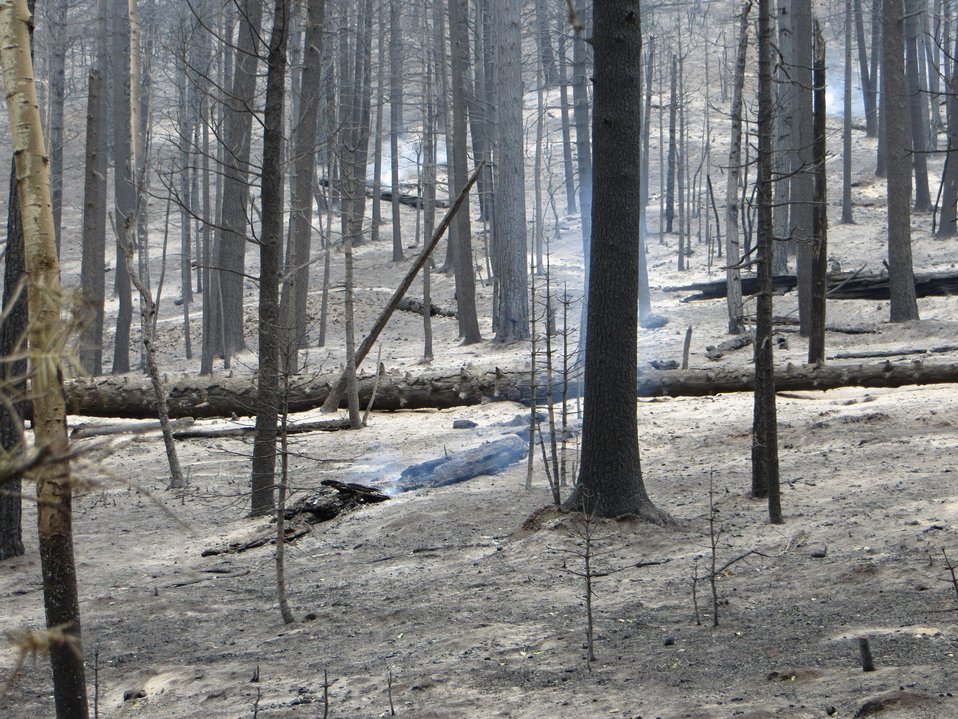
A burned out section of forest at the Thompson Ridge Fire in the Sante Fe National Forest approximately 10 miles north of Jemez, NM began on May 31, 2013 by human ignition has consumed over 29, 903 acres.